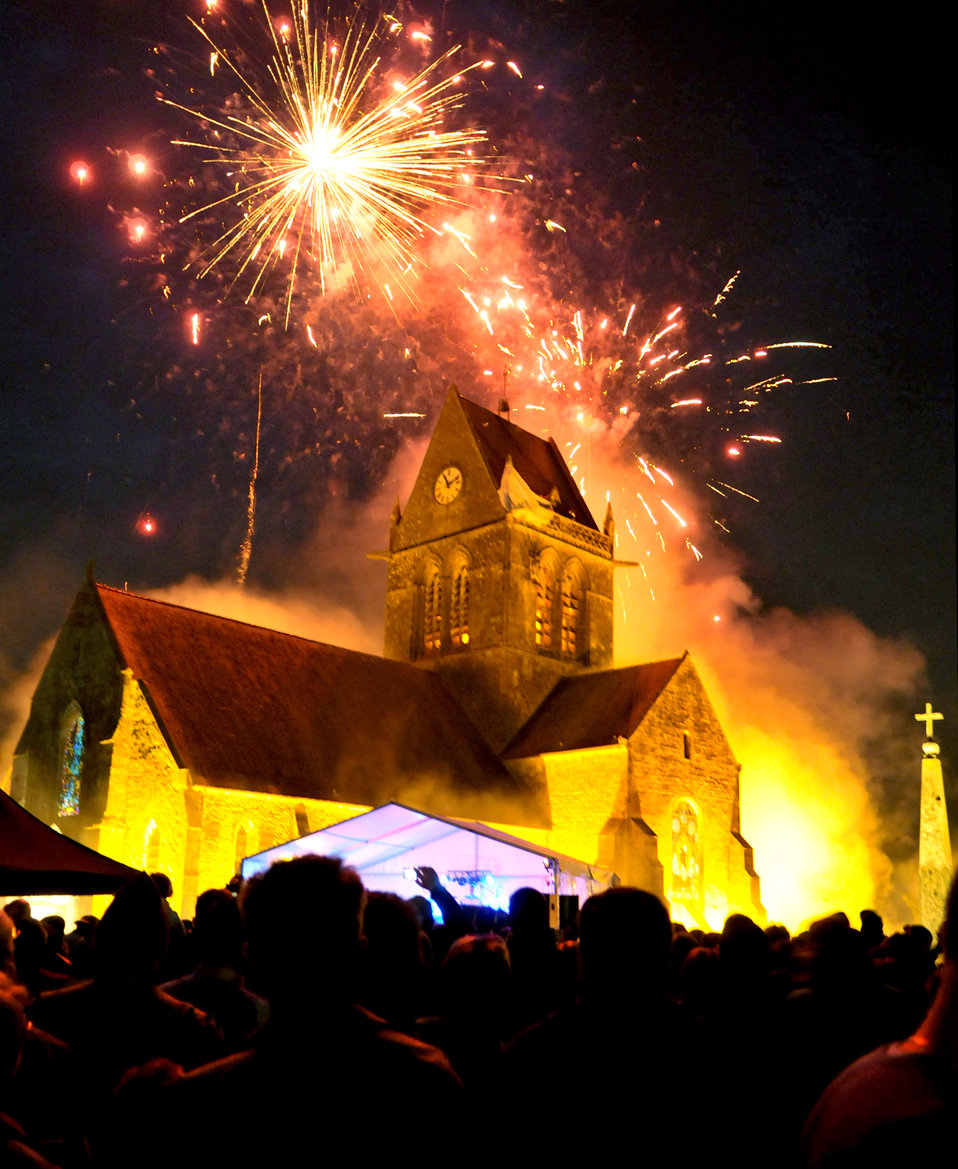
Airmen commemorate D-Day

Fireworks burst June 5, 2010, over a church in St. Mere Eglise, France, during a celebration commemorating the 66th anniversary of the D-Day landings in World War II. French, British, German and American servicemembers participated in a memorial parachute drop here.